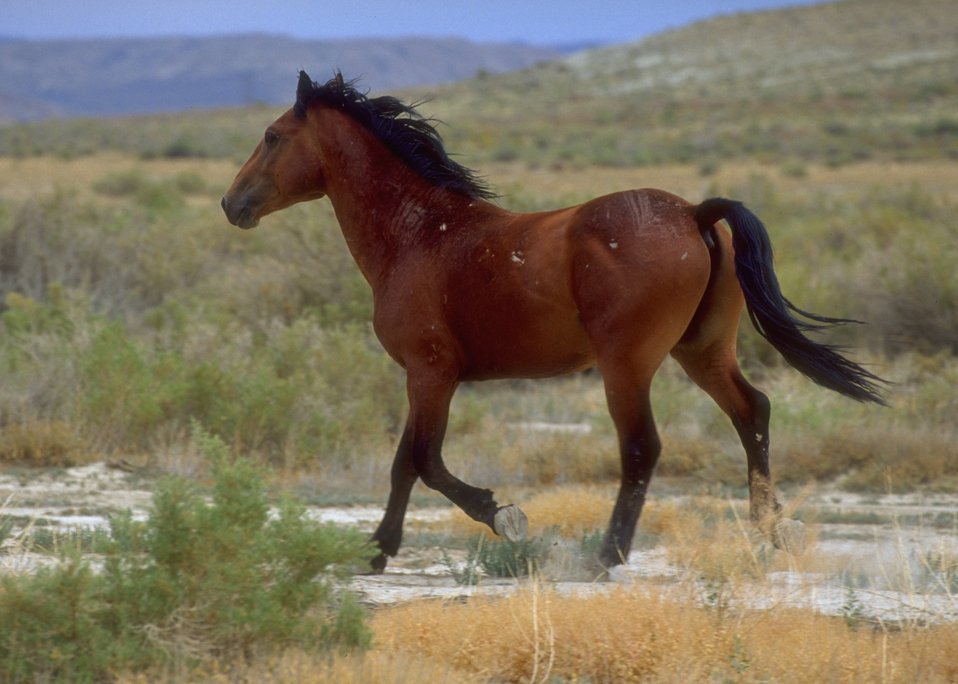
Wild horses, Rock Springs Field Office.